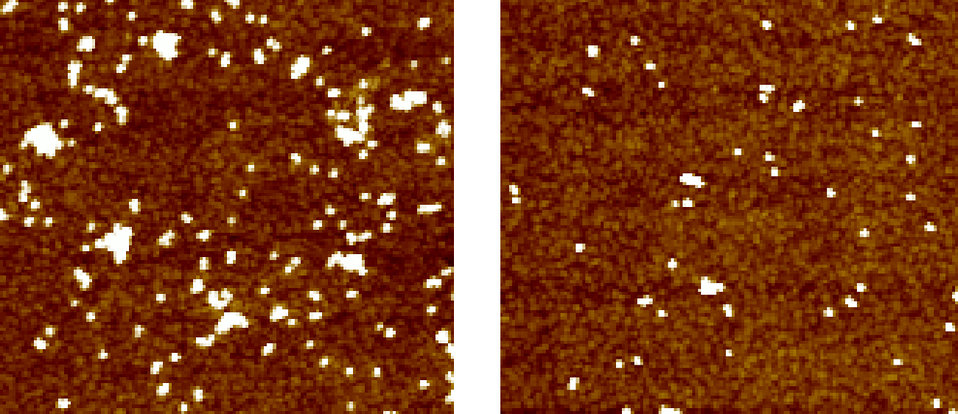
Nanoparticles

After gold nanoparticles are trapped on the brown collection surface (left), the NIST team can apply a mild electric field and release most of them (right). The ability to trap and release particles in this fashion could aid in studying their properties, particularly with respect to their effects on human health.